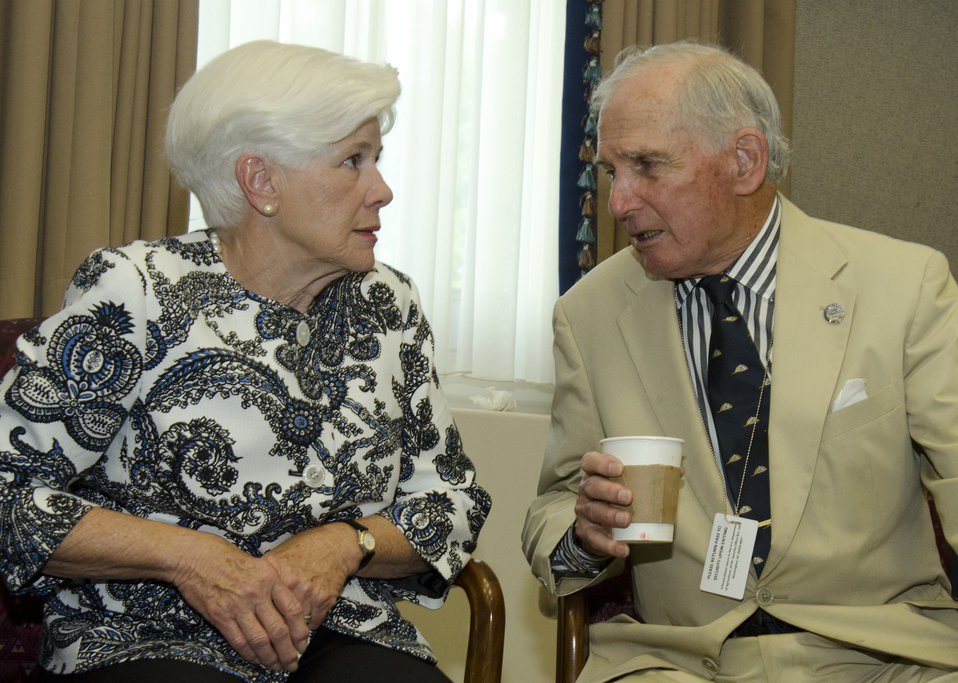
Agriculture Deputy Secretary Krysta Harden’s mother, Jamie Harden talks with U.S. Department of Agriculture (USDA) Under Secretary for Natural Resources and Environment (NRE) Robert Bonnie’s father, Ned Bonnie, after the swearing in ceremony of Agriculture Deputy Secretary Harden and USDA Under Secretary Bonnie at USDA in Washington, D.C. on Monday, Aug. 12, 2013.